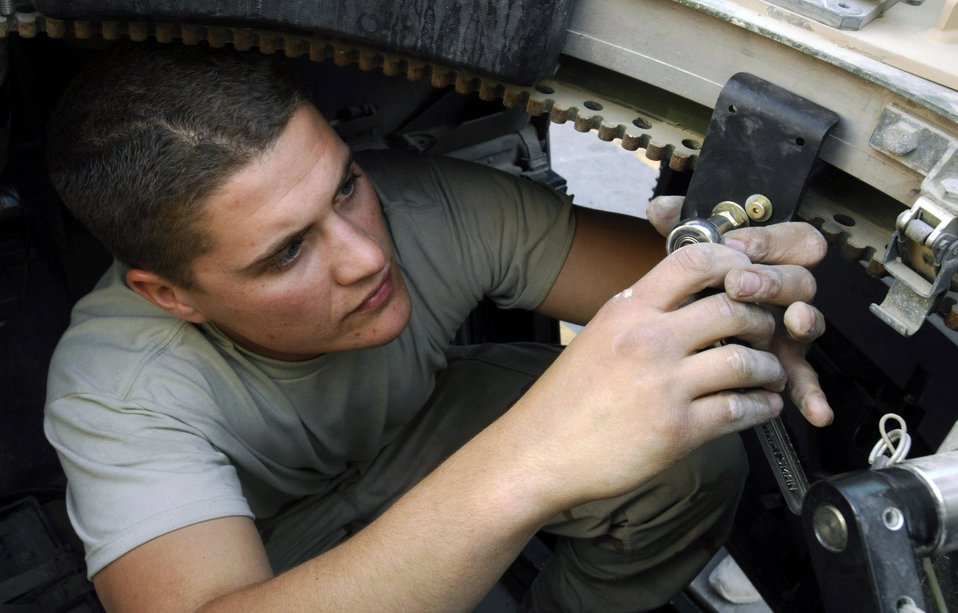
Making it safer

Senior Airman Josh Theunissen tightens down a gunner's restraint inside the turret of a Humvee Nov. 27. Sergeant Theunissen installs up-armor kits, fire suppression systems, improved seat belts and gunner restraints in Air Force combat vehicles.